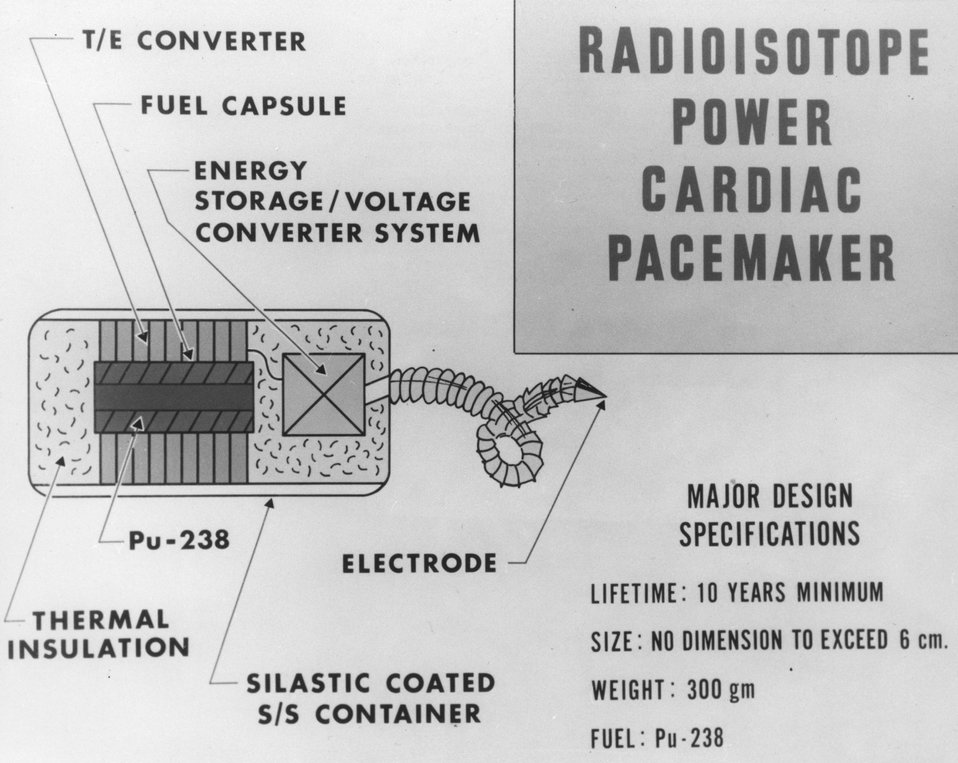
This radioisotope-powered cardiac pacemaker being developed by the Atomic Energy Commission, is planned to stimulate the pulsing action of a malfunctioning heart. Circa 1967.